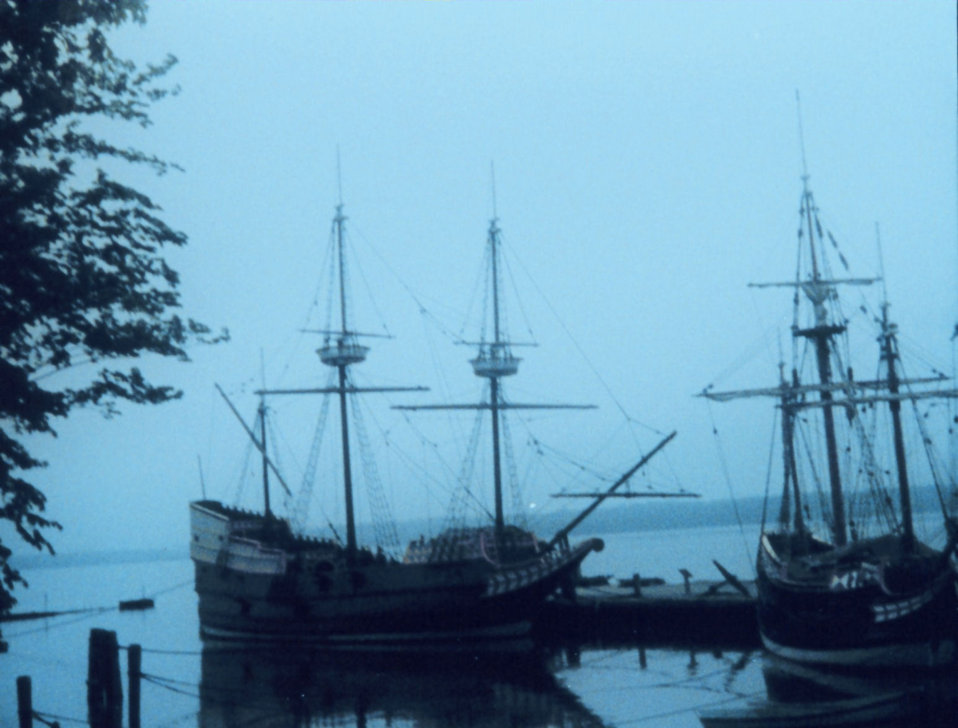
Jamestown - a scene from the 1620's